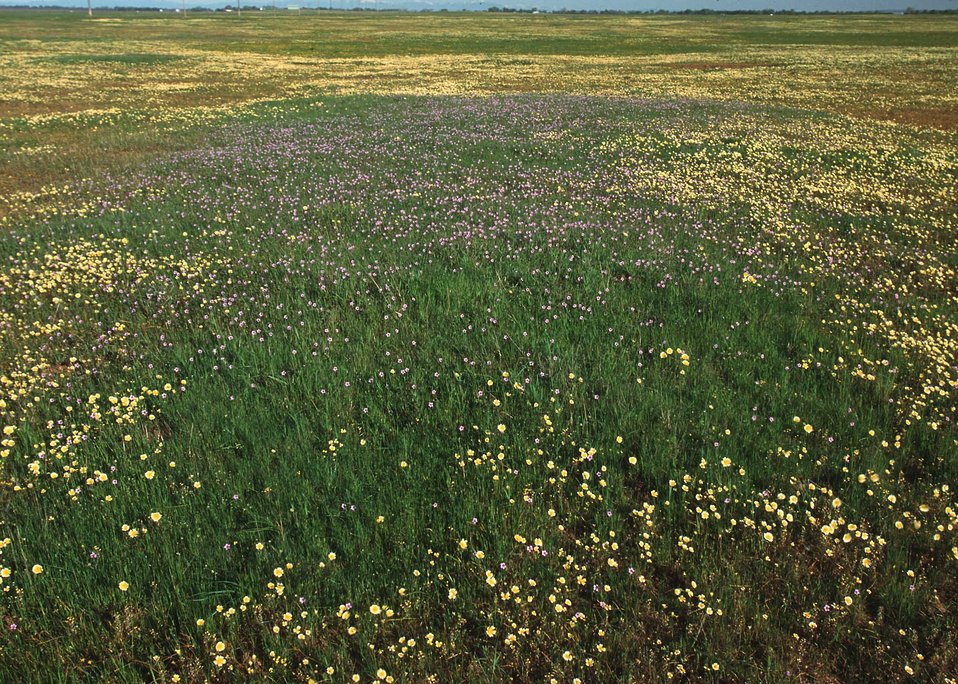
Vernal pool in northern California.